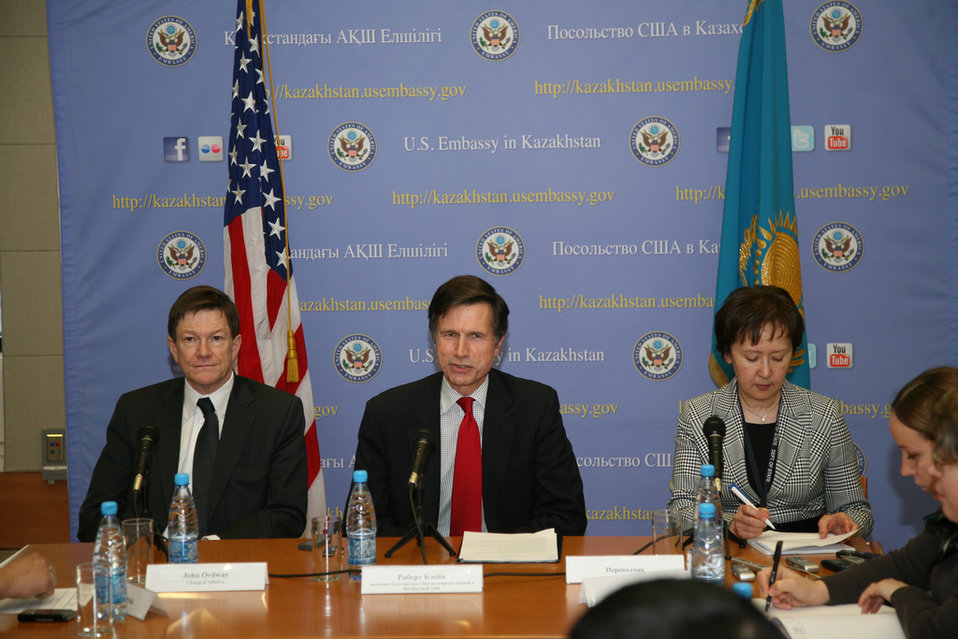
Assistant Secretary Blake and Charge d'Affairs Ordway Participate in a Media Roundtable

Assistant Secretary of State for South and Central Affairs Robert O. Blake, Jr., center, and Charge d’Affaires, a.i. John Ordway, left, meet with the press at the U.S. Embassy in Kazakhstan in Astana, on March 25, 2011.